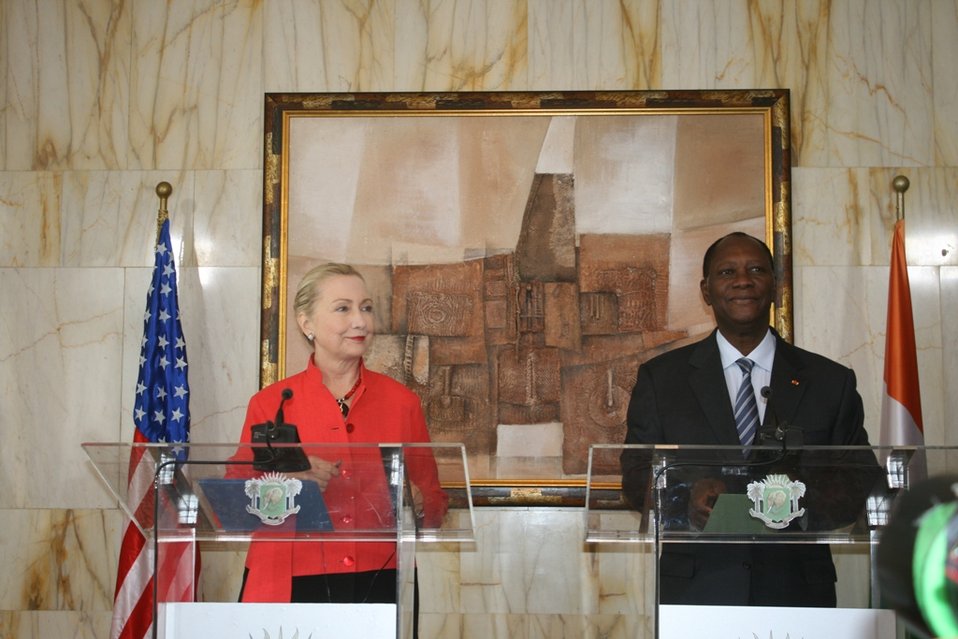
Secretary Clinton and Ivoirian President Ouattara Hold a Joint Press Conference

U.S. Secretary of State Hillary Rodham Clinton and Ivoirian President Alassane Ouattara respond to questions from reporters during their joint press conference at the Presidential Palace in Abidjan, Cote d’Ivoire, on January 17, 2012.